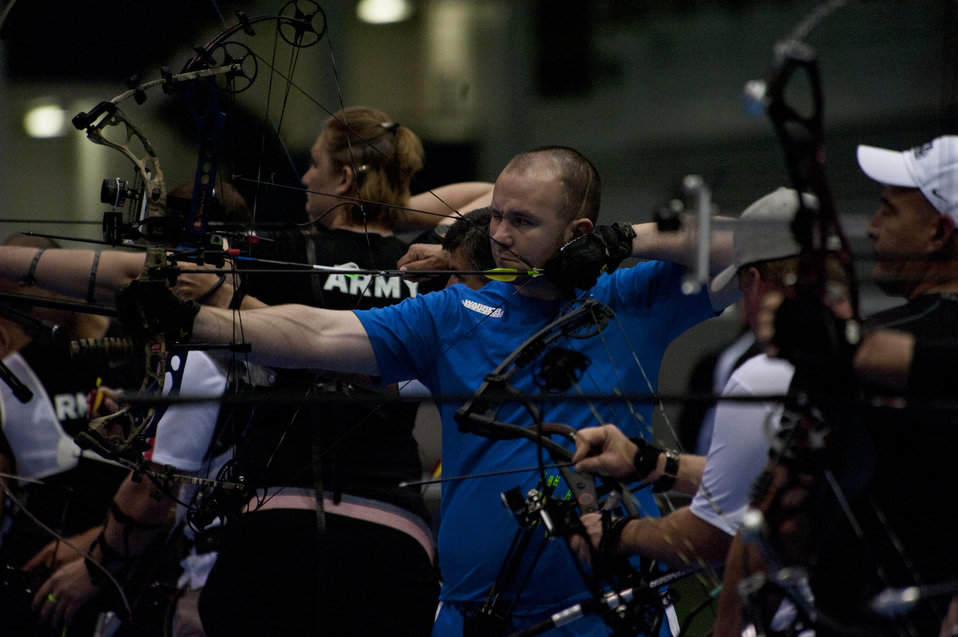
Warrior Games

Kevin Taylor, in blue, aims his bow at his target during the archery competition of Warrior Games 2012 at the U.S. Air Force Academy in Colorado Springs, Colo., May 2, 2012. Taylor is with the Air Force team.